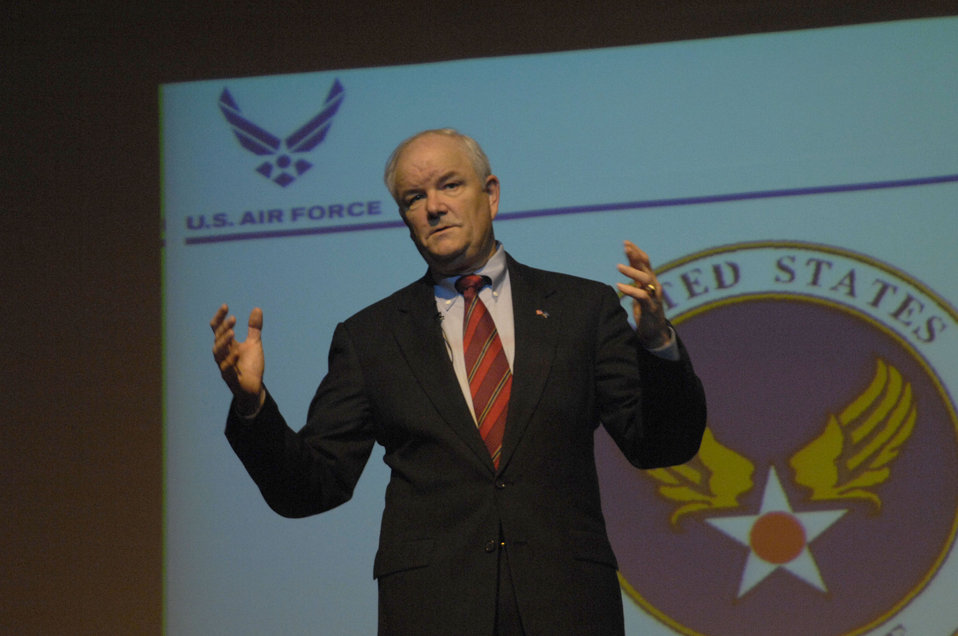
SECAF's town hall meeting

Secretary of the Air Force Michael W. Wynne discussed where he expects the Air Force to be in the future during his town hall meeting with Airmen and Air Force civilians at the Pentagon Jan. 31. Following his discussion of where he expects the Air Force to be in the future, he took questions from the audience.